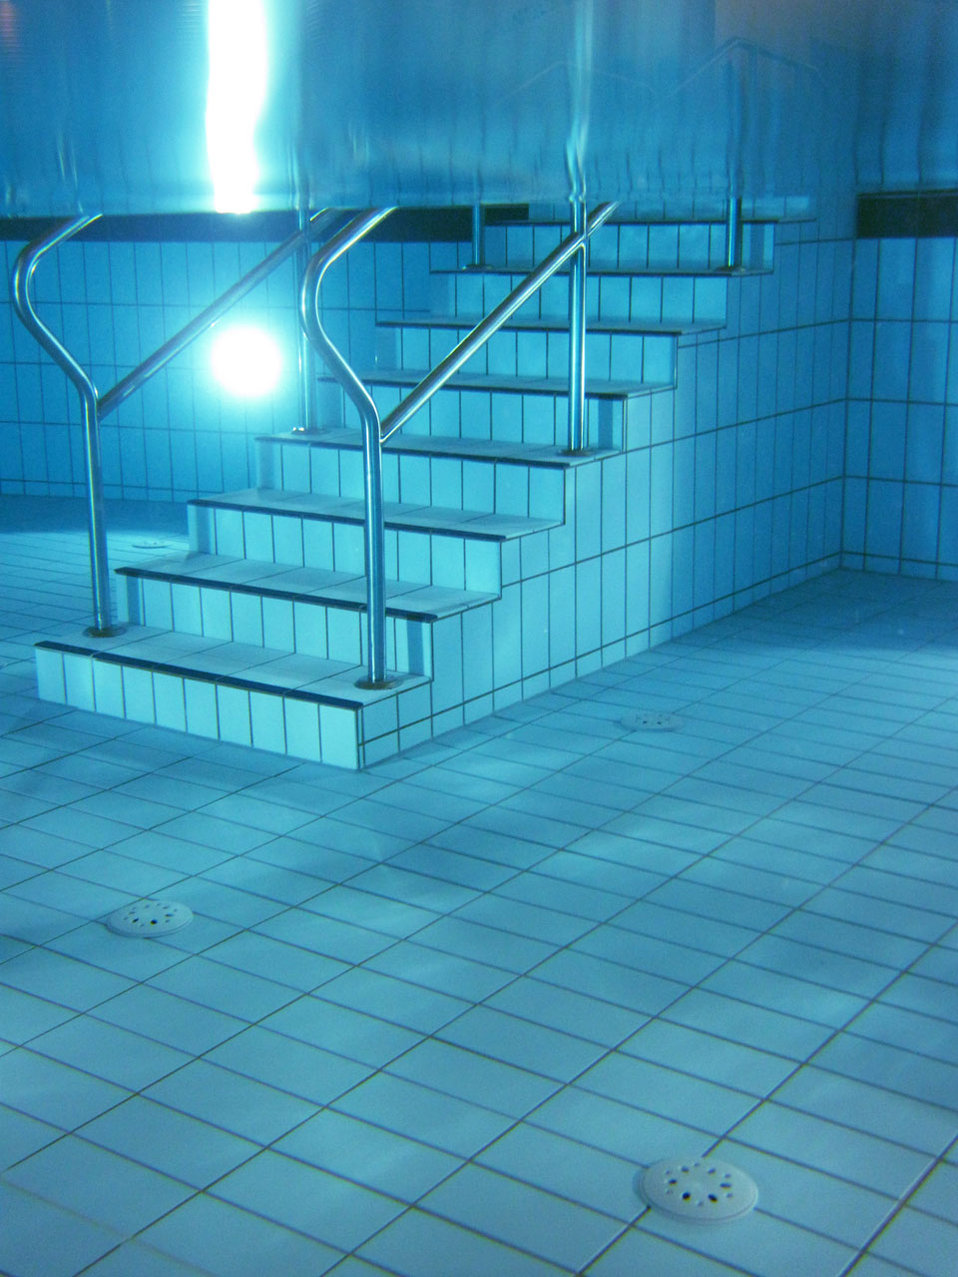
Pool stairs underwater in portrait composition.